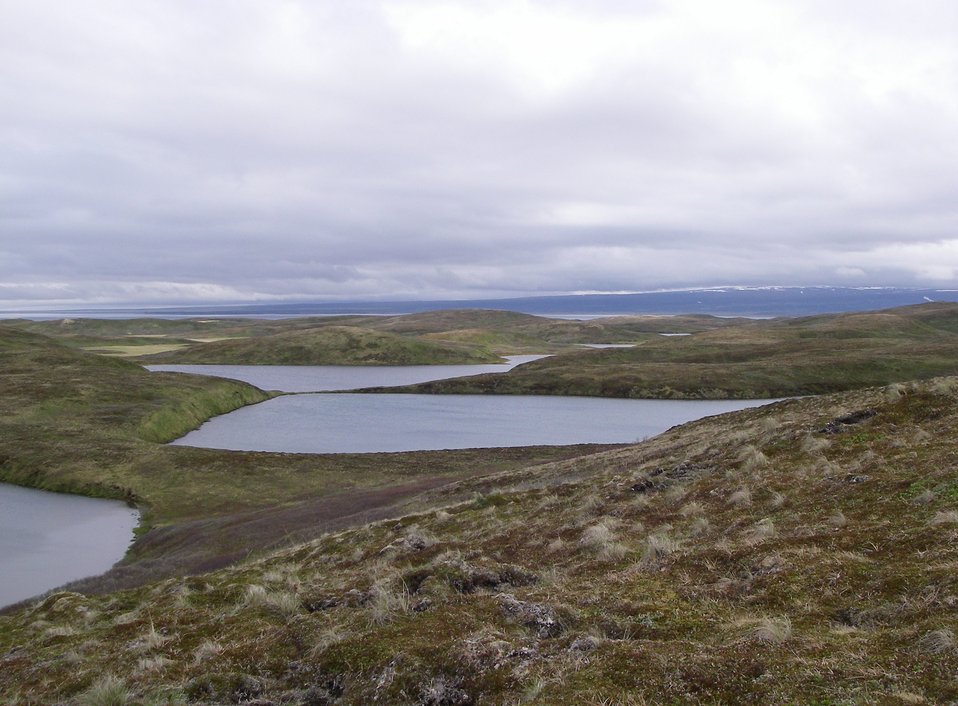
Izembek Wilderness

Wilderness north of Kinzarof Lagoon, Izembek National Wildlife Refuge
Photo by Kristine Sowl,
USFWS, Public Domain